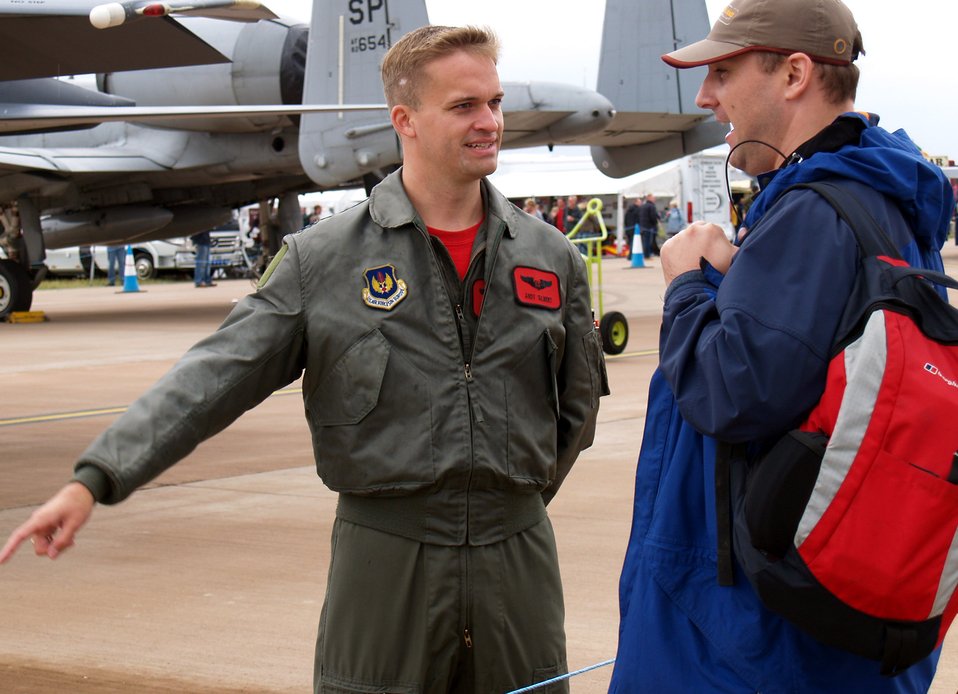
Royal Internation Air Tattoo

Captain Andy Gilbert, an F-15E Strike Eagle weapons system officer with the 494th Fighter Squadron from Royal Air Forces Lakenheath, England, chats with spectator James Denning July 15 at the Royal International Air Tattoo at RAF Fairfield.